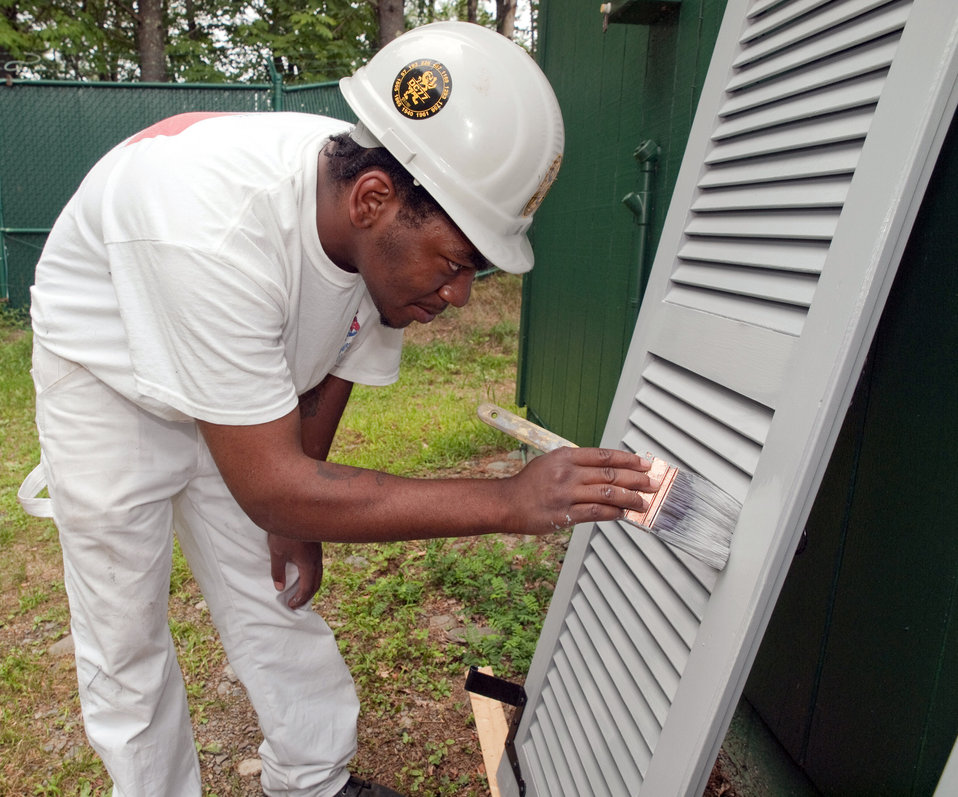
Job Corps students help to restore Grey Towers National Historic Site. $2,440,000 in Recovery Act funds were allocated to repair and refurbish the house and grounds of the ancestral home of the first Chief of the Forest Service and two-term Pennsylvania governor Gifford Pinchot on Tuesday August 3, 2010 in Milford, PA. This project at the 123-year-old site repairs various deficiencies with the buildings and grounds, restores areas of the historic landscape, improves visitor safety and site security, provides a more sustainable facility, and enhances the visitor experience. It helps to ensure the historic site is maintained for years to come.